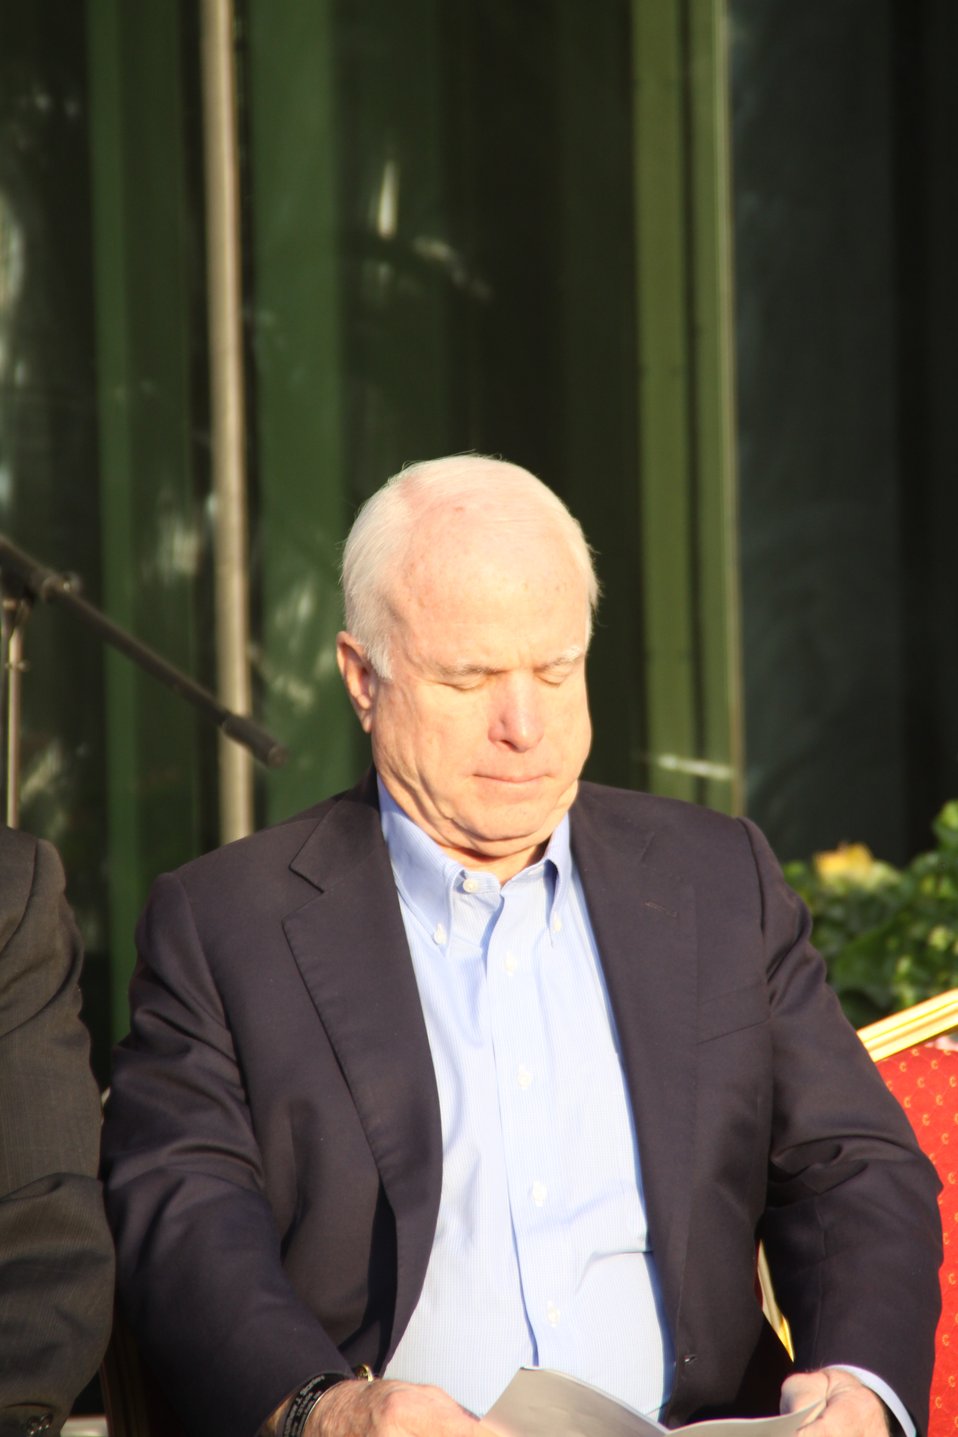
Senator McCain